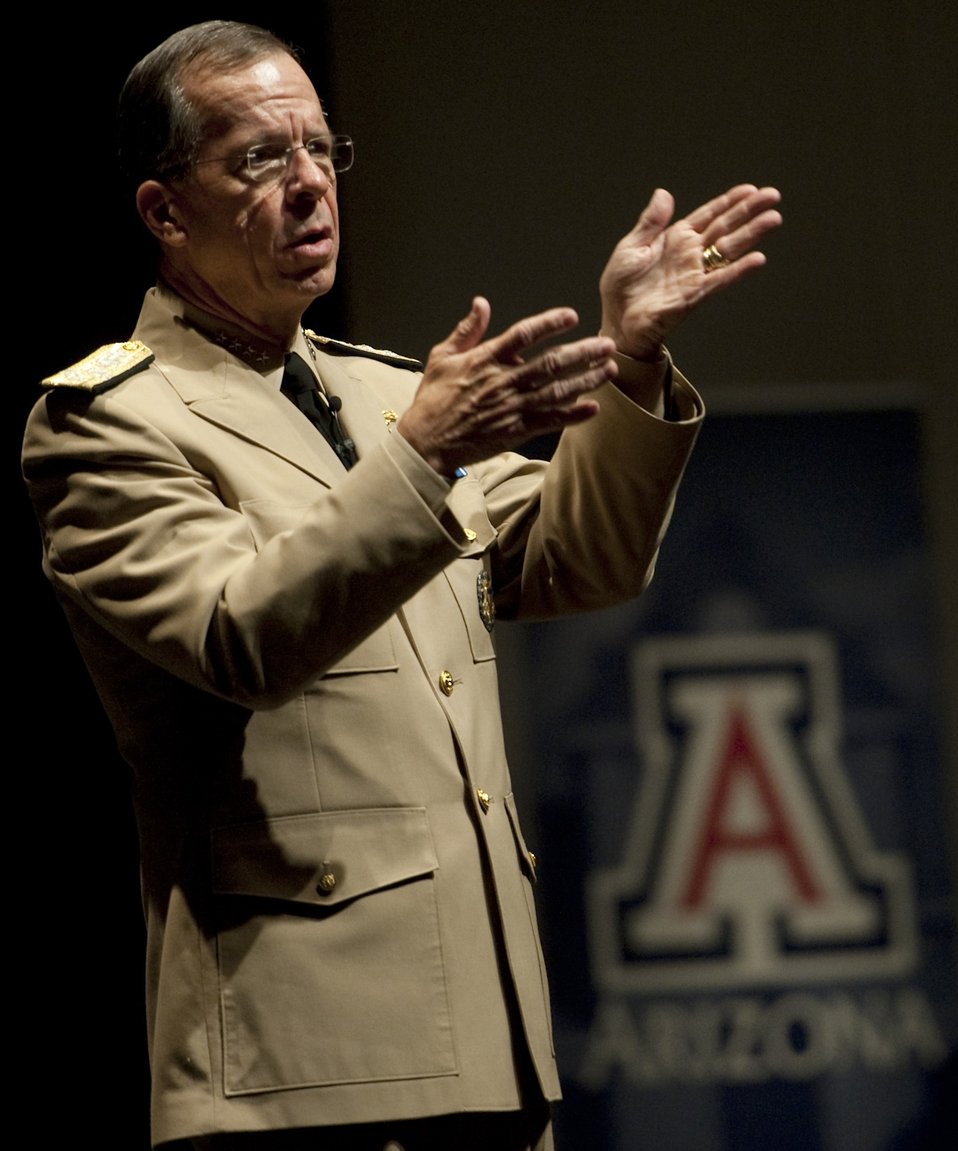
Communities, veterans can help each other

During a town hall meeting at the University of Arizona in Tucson Oct. 2010, Adm. Mike Mullen, chairman of the Joint Chiefs of Staff, encouraged local educators, students and business and community leaders to find ways to employ veterans and put their abilities to use.